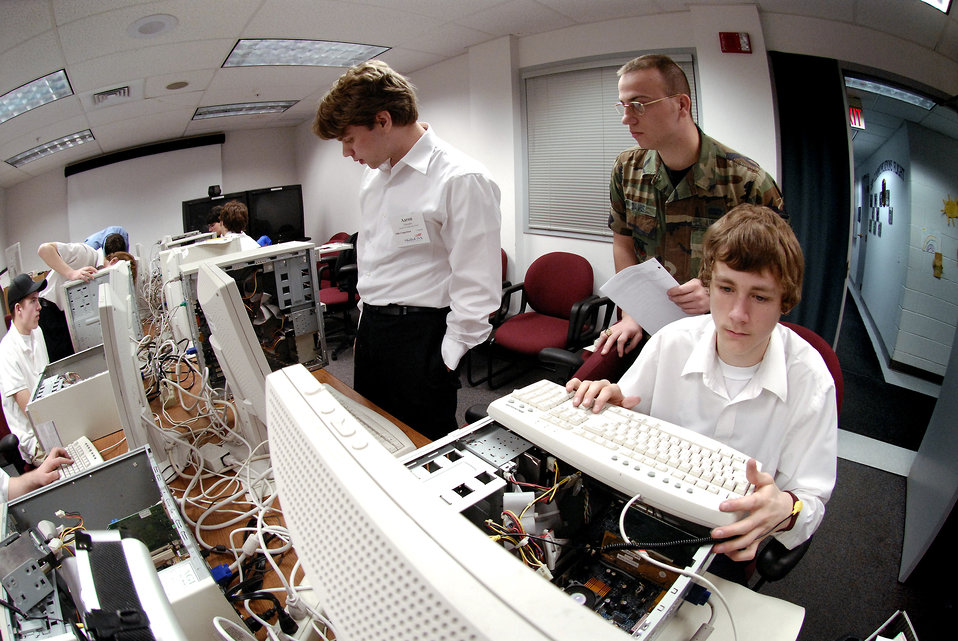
Vermont Guard hosts leadership, skills competition

Staff Sgt. Ryan Davis monitors the SkillsUSA computer maintenance competition, hosted by the Vermont Air National Guard. Waiting for his computer to reboot is Aaron Edwards, an 11th grader at the Center for Technology in Essex, Vt. Craig Beyette troubleshoots his computer. He is an 11th grader at Stafford Technical Center in Rutland, Vt. Sergeant Davis is a computer network, switching and cryptographic specialist with the 158th Communications Flight in South Burlington, Vt.